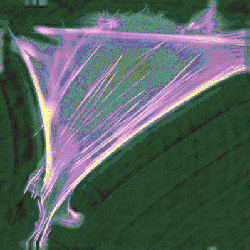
Smooth muscle cells

NIST researchers have genetically engineered smooth muscle cells that can help in evaluating biocompatible materials such as blood vessel stents. This is a colorized image of a fully extended smooth muscle cell.